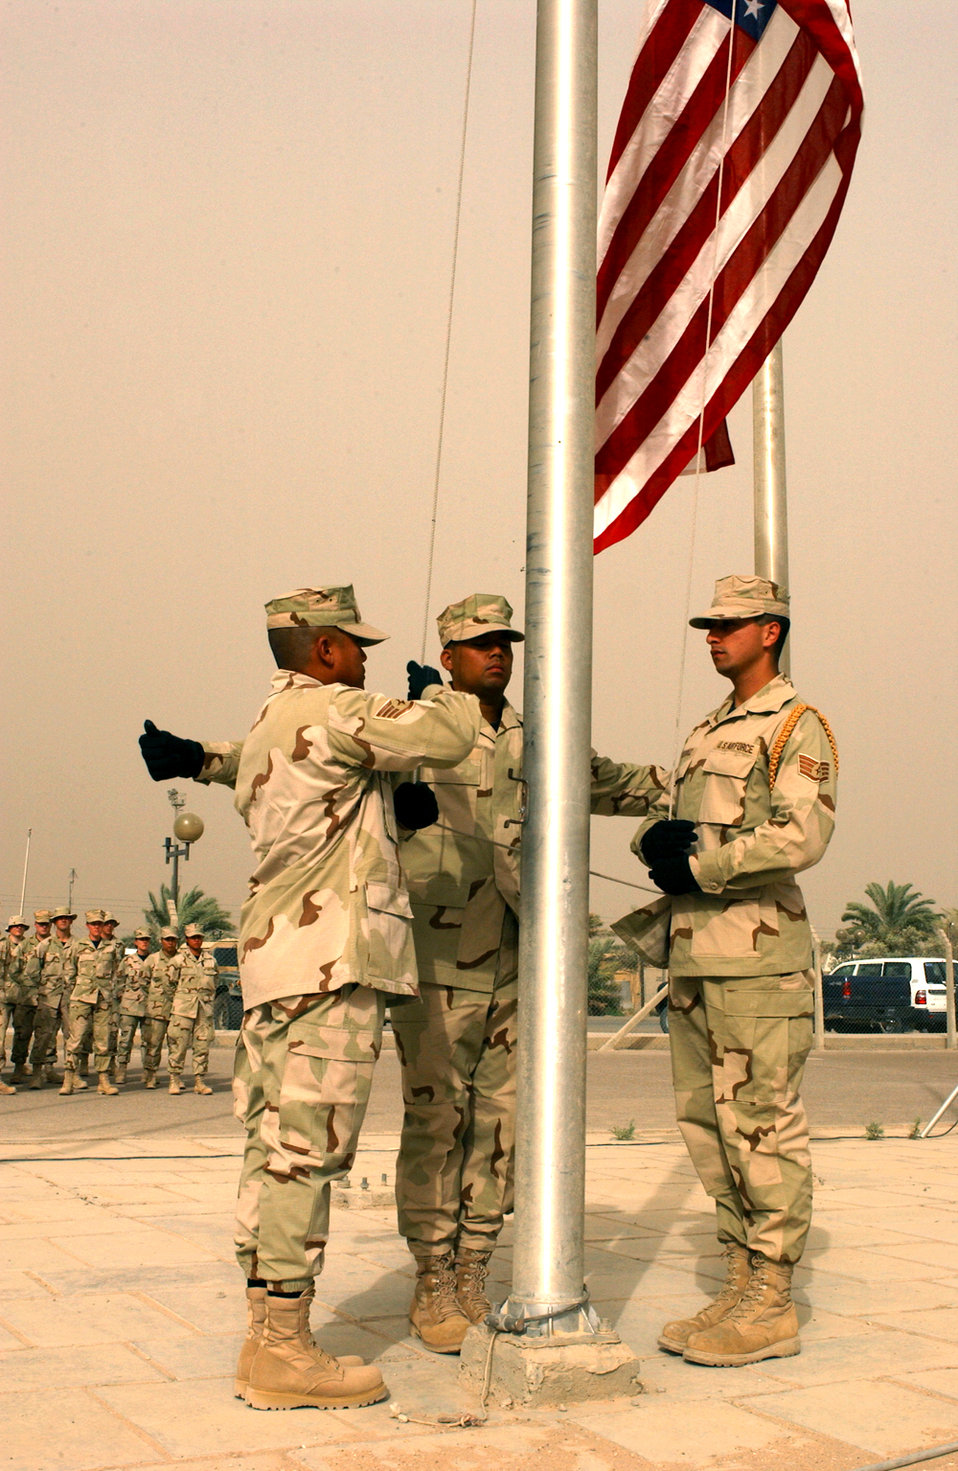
Honoring freedom

BAGHDAD, Iraq -- (From left) Staff Sgt. Aldrin Saguin, Tech. Sgt. Joseph Romero and Staff Sgt. Steve Gutierrez lower the flag during a retreat ceremony here celebrating Independence Day. The Airmen are honor guard members and are assigned to the 447th Expeditionary Civil Engineer Squadron here. They are deployed from Kadena Air Base, Japan.